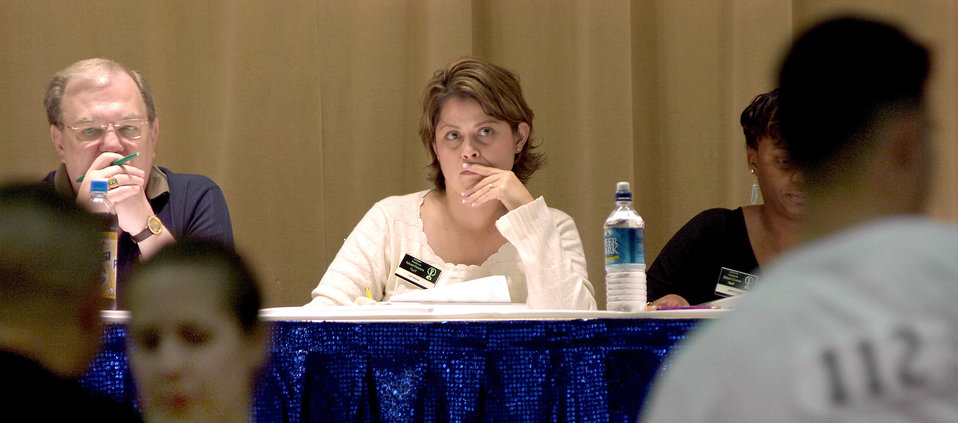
Tops In Blue

LACKLAND AIR FORCE BASE, Texas (AFPN) -- Tom Edwards, left, and Capt. Christina Martin judge the dance auditions in the 2006 Air Force Worldwide Talent Competition. More than 60 Airmen auditioned and practiced this week. The week ended with a live performance at the Worldwide Talent Contest. Along with trophies, they competed for a spot in the 2006 Tops In Blue tour. Mr. Edwards is the Tops In Blue director for Air Force Entertainment and Captain Martin is the Air Force Services Agency operations officer.